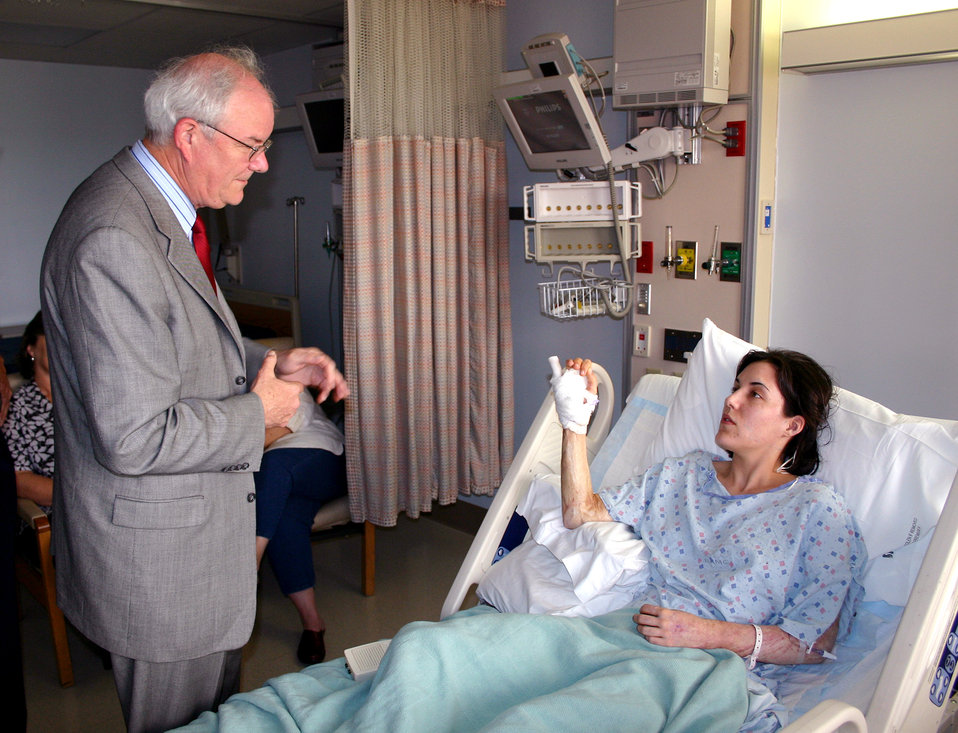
Secretary Wynne expects Airmen to continue to excel

Capt. Therese Frentz explains her injuries to Secretary of the Air Force Michael W. Wynne at Brooke Army Medical Center on Thursday, June 1, 2006. Secretary Wynne was in San Antonio visiting various military installations and training sites. Captain Frentz was hospitalized for skin graft surgery this week. She was injured in October 2004 when a suicide bomber attacked a caf√© in Baghdad's Green Zone. Her injuries included burns on 30 percent of her body and shrapnel to her knees and abdomen.